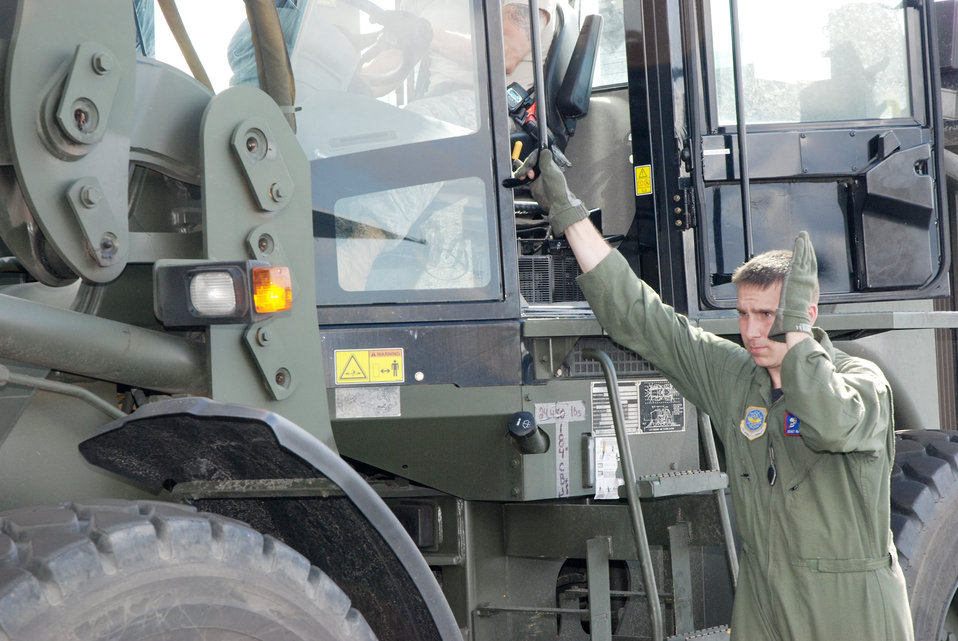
Coronet Oak aircrews respond to Haiti earthquake

Chief Master Sgt. Todd Hunt, a 35th Expeditionary Airlift Squadron loadmaster, directs the loading of cargo by a forklift Jan. 22, 2010, at Homestead Air Reserve Base, Fla. Homestead served as an airlift hub for Operation Unified Response. The chief worked side-by-side with reservists, active-duty Airmen and other Guardsmen loading cargo on an Ohio Air National Guard C-130 Hercules in support of the earthquake victims in Haiti. Chief Hunt is assigned to the Ohio Air National Guard's 179th Airlift Wing at Mansfield, Ohio.